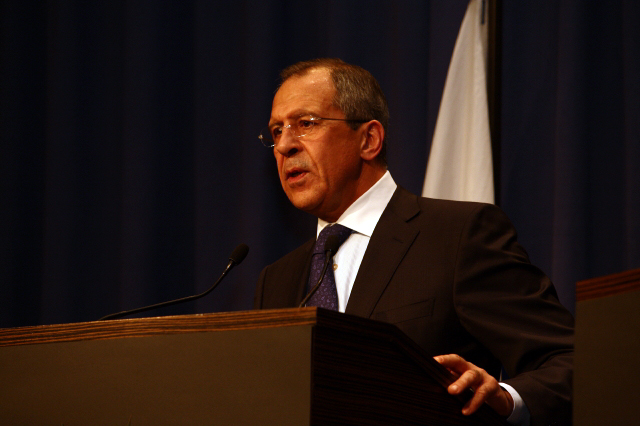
Press Conference With Russian Foreign Minister

Press conference after dinner meeting between U.S. Secretary of State Hillary Rodham Clinton and Russian Foreign Minister Sergey Lavrov in Geneva, Switzerland March 6, 2009.